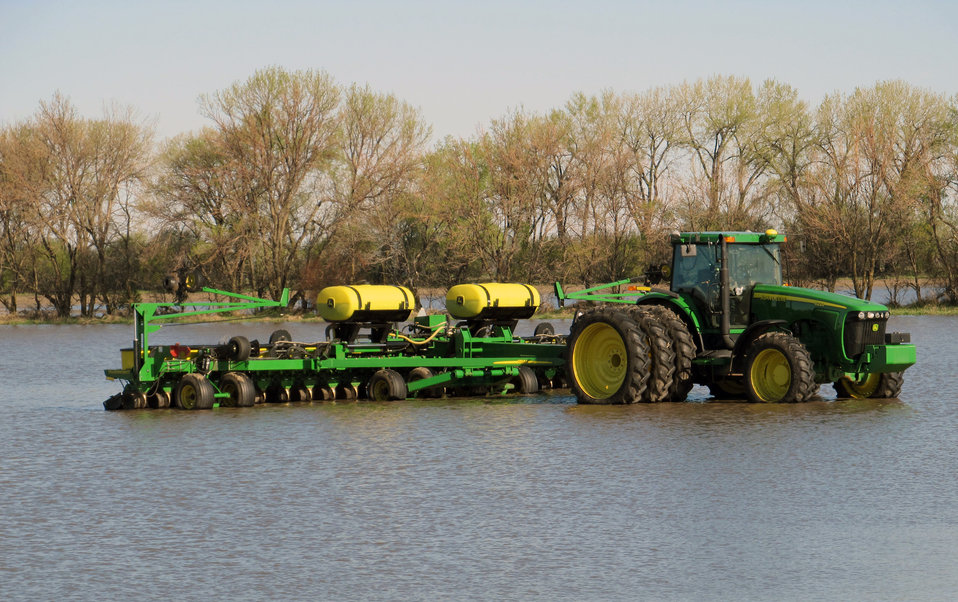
Flooding and water damage in the Park and Tongue River Watersheds located in Cavalier, Pembina and Cavalaier Counties in North Dakota on Thursday, May 23, 2013.